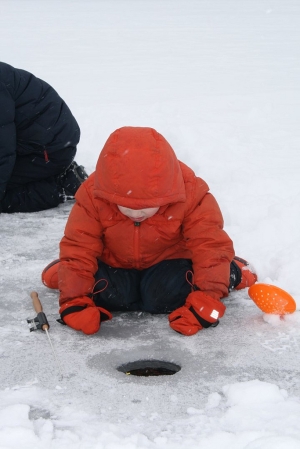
Anything there?

A child checks for action beneath the surface while ice fishing at Upper Mississippi National Wildlife Refuge.